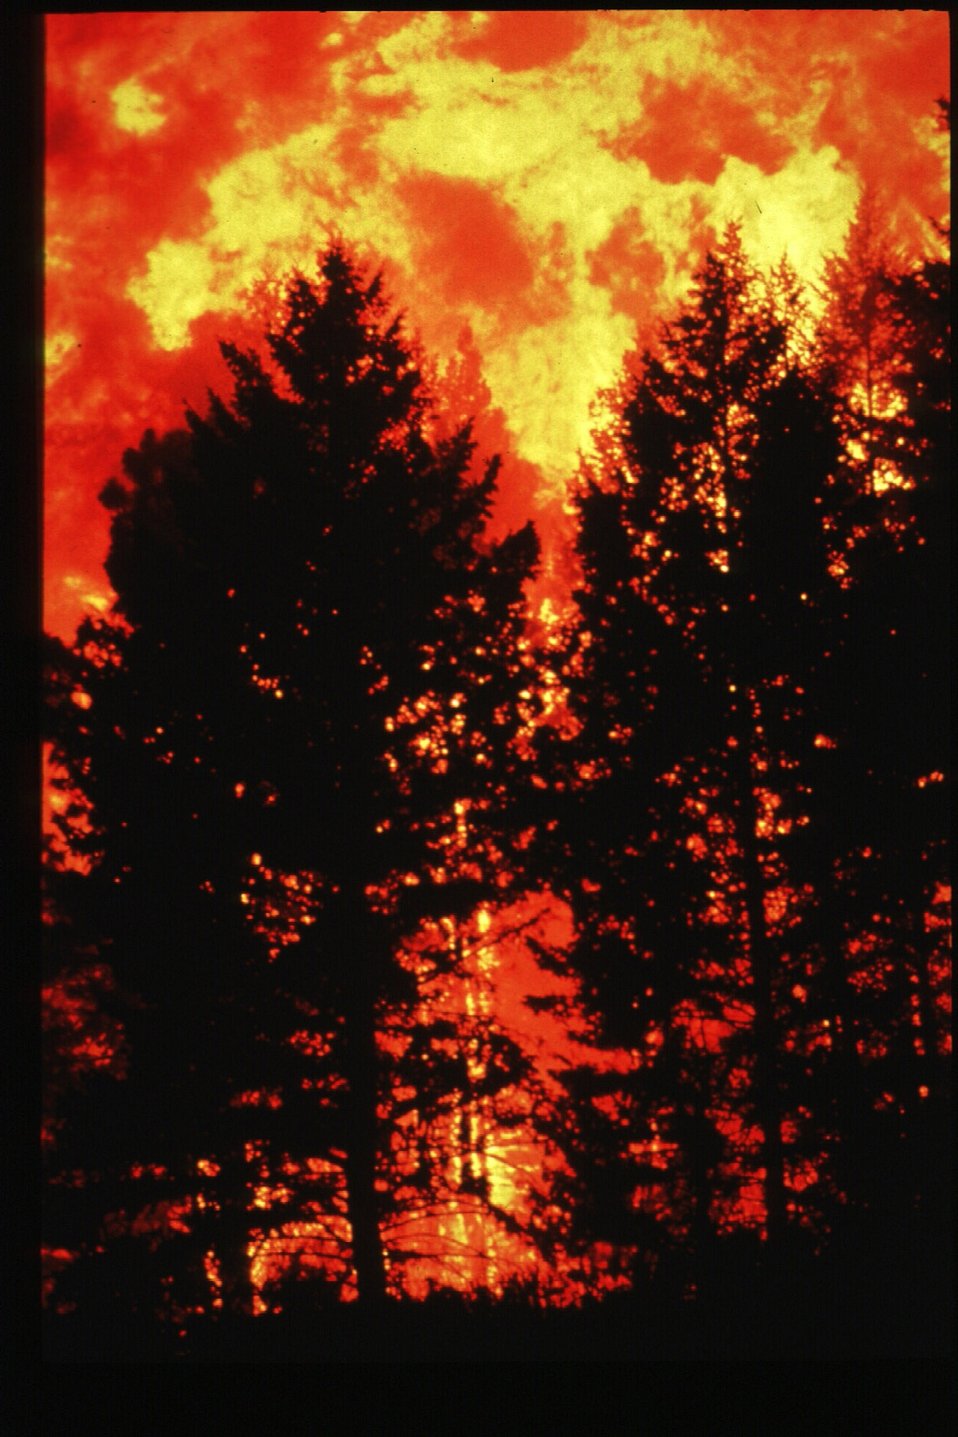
Boise Foothills Fire Danskin Mountains and South Fork of Boise River Four River Field Office LSRD Lower Snake River District